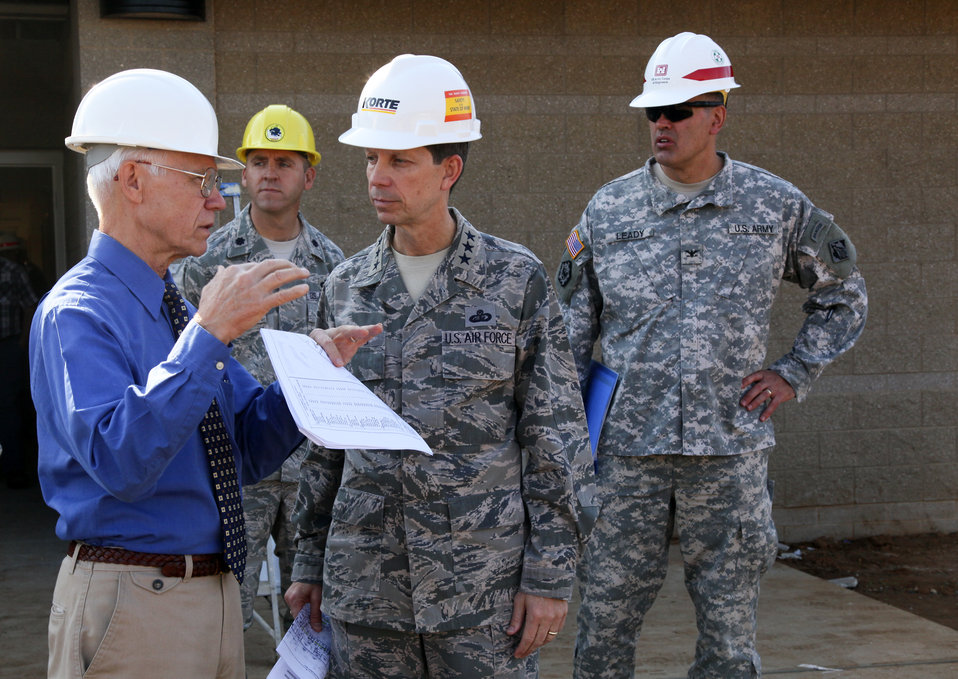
New Child Development Center nears completion at Beale

Beale Air Force Base Architect Jim Kanclier (left) briefs Lt. Gen. Darrell D. Jones (second from right), the U.S. Air Force Headquarters’ Deputy Chief of Staff for Manpower, Personnel and Services, on ongoing construction of the Child Development Center at Beale AFB near Marysville, Calif., Oct. 25, 2011. Joining Jones at the construction site was Col. Bill Leady (right) commander of the U.S. Army Corps of Engineers Sacramento District, and Lt. Col. Shoviak (center), the Beale Air Force Base Civil Engineer. The Sacramento District is administrating construction of the 38,000 square-foot center, capable of accommodating 280 children from the ages of six weeks through five years old. Occupancy is scheduled to begin in December 2011 and a ribbon cutting ceremony is planned for the $11.2 million center in January 2012.